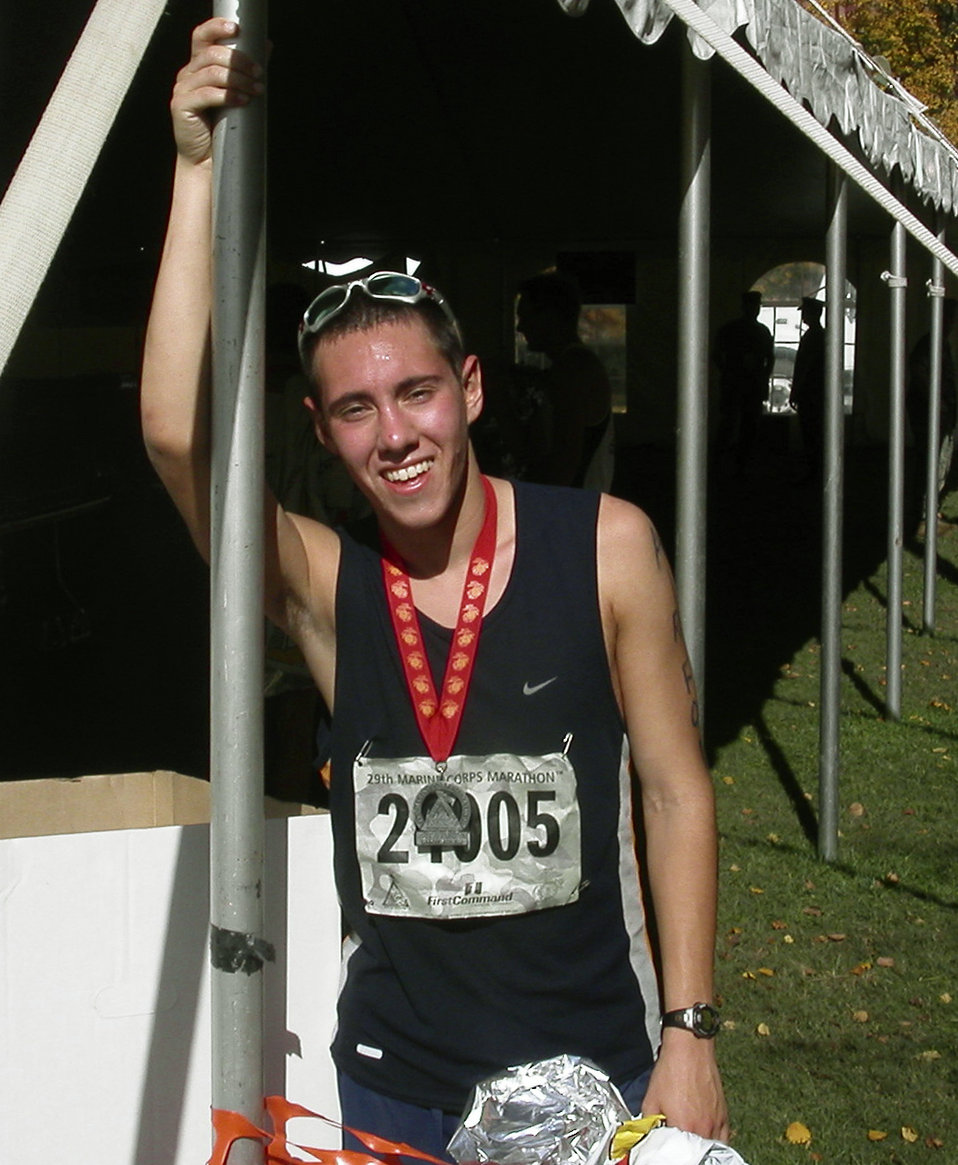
ROTC cadets use marathon to reinforce core values

ARLINGTON, Va. -- Air Force ROTC Cadet Tim Kogge rests after running in the Marine Corps Marathon. Nine University of Notre Dame cadets from Air Force ROTC Detachment 225 traveled here from Indiana for the race.